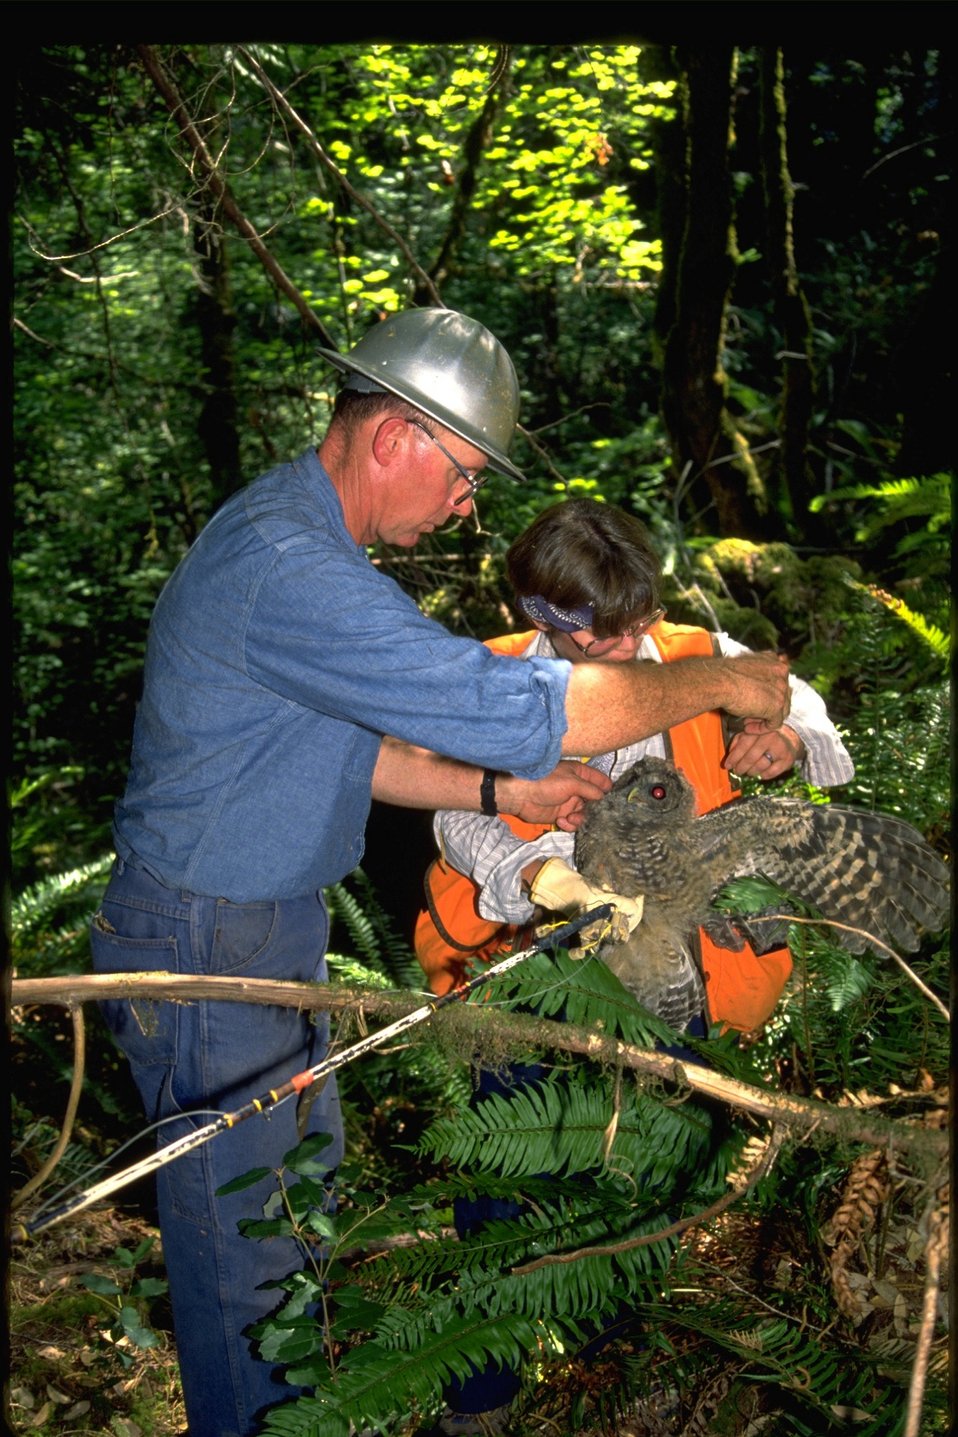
Joanne and Frank removing noose from a baby Northern Spotted Owl.